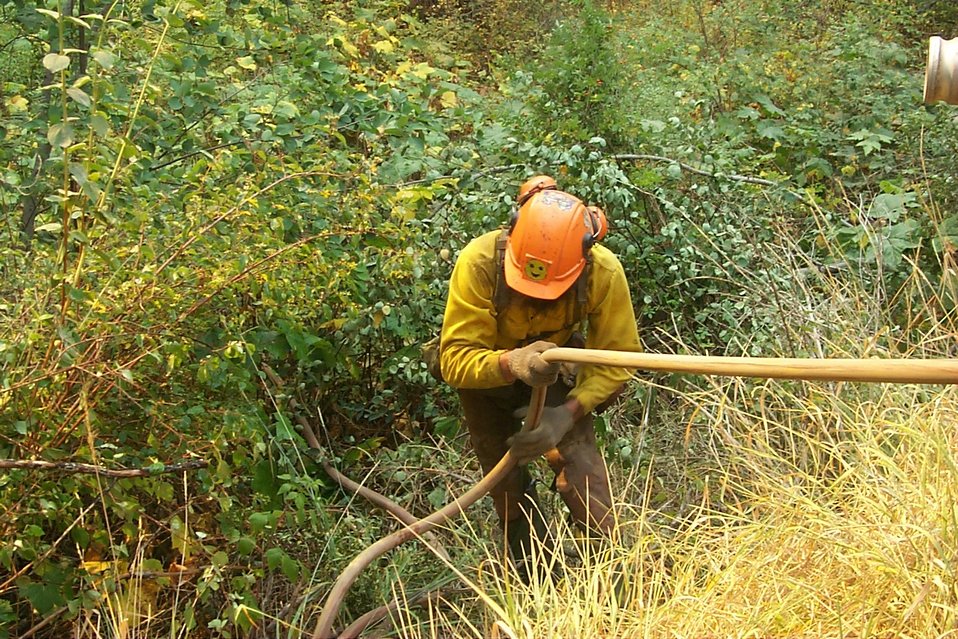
Filling fire engine Fire Clearwater Fire Salmon Field Office USRD Upper Snake River District